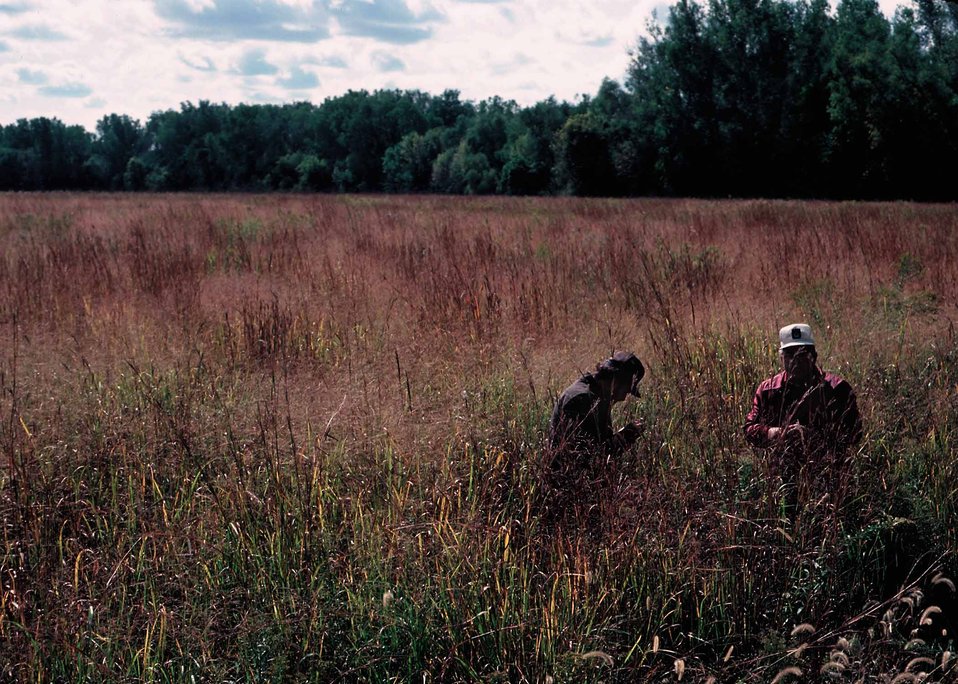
Mixture of native grass plantings in southern Iowa.